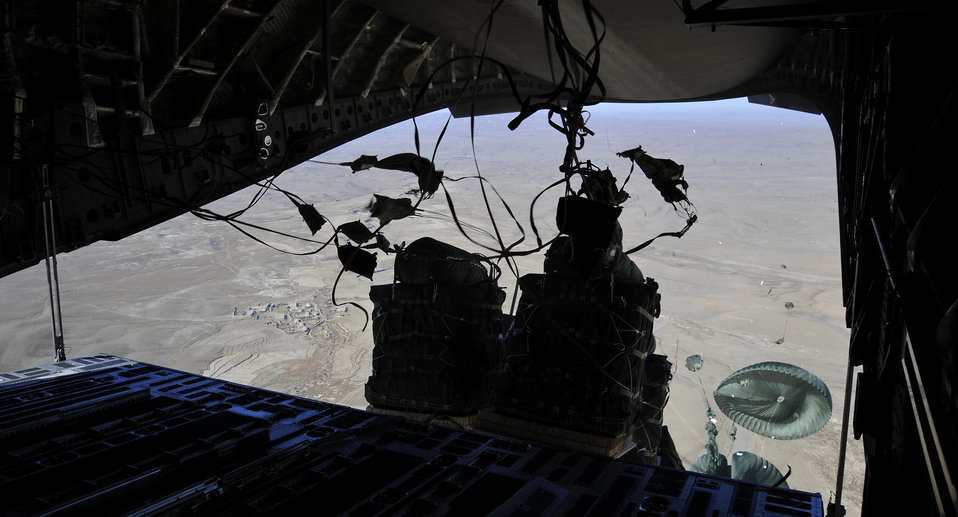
Airmen, Soldiers airdrop supplies to Afghanistan

Parachutes tethered to container delivery system bundles catch air over Afghanistan after sliding off the ramp of a C-17 Globemaster III Jan. 9, 2010. Airmen from the 816th Expeditionary Airlift Squadron loaded and air dropped the bundles, which can contain supplies such as fuel, food and water needed by U.S. ground forces.